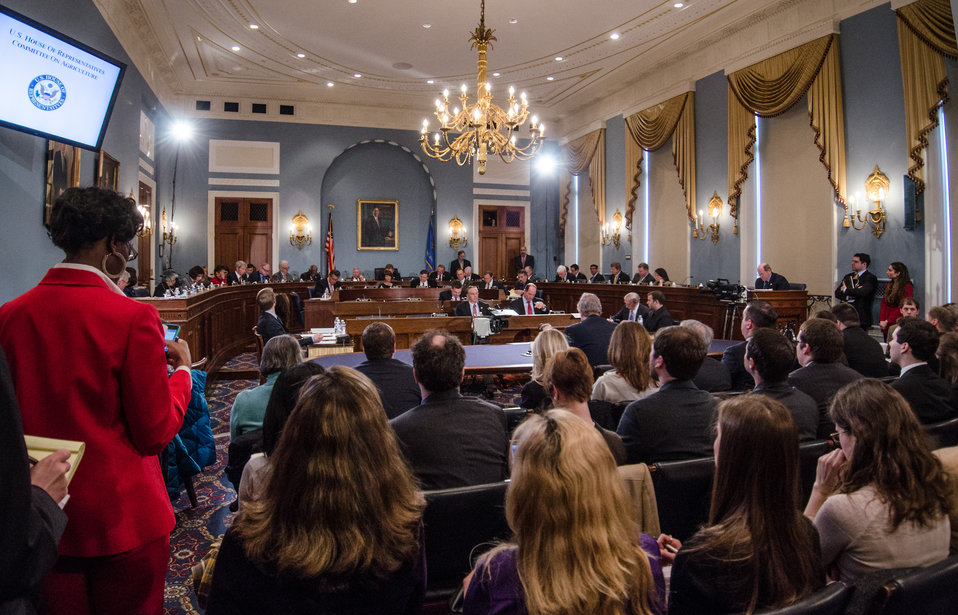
Agriculture Secretary Tom Vilsack (at table) testifies before the House Agriculture Committee regarding the “State of the Rural Economy“ at the Longworth Office Building in Washington, D.C. on Tuesday, Mar. 5, 2013.